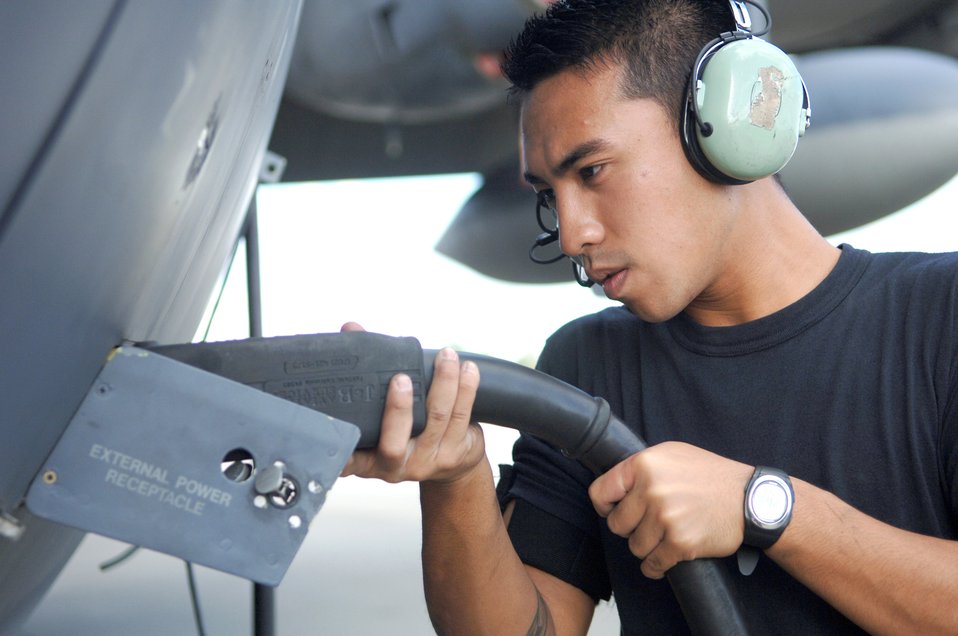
Moody maintainers take initiative with AFSO 21

Airman 1st Class Philip Yago connects a plug to the external power receptacle of an HC-130P Nov. 28 at Moody Air Force Base, Ga. The 723rd Maintenance Group recently conducted a two-day meeting to find efficiencies and cut waste from the C-130 Hercules isochronal inspection process. Airman Yago is a 723rd Aircraft Maintenance Squadron crew chief.